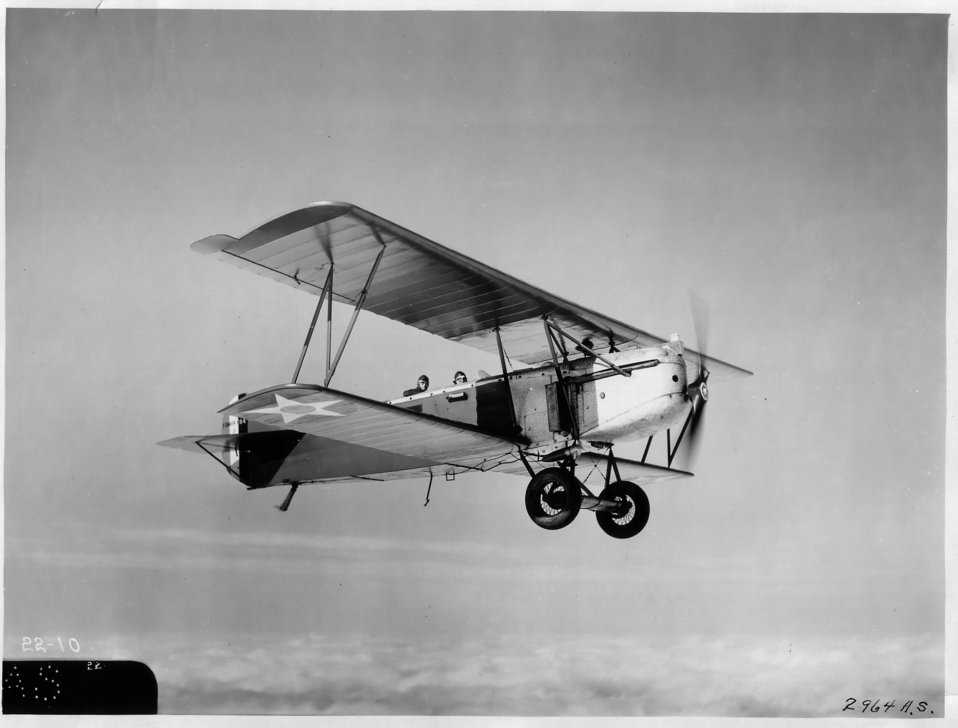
Fokker CO-4

EARLY YEARS -- Fokker CO-4 (Atlantic/Fokker Holland) - Army observation. Dutch construction, essentially an evolution of the German wartime D.7 fighter via AO-1 . One of the first United States Army Air Corps (USAAC) planes to feature a metal propeller. 1925